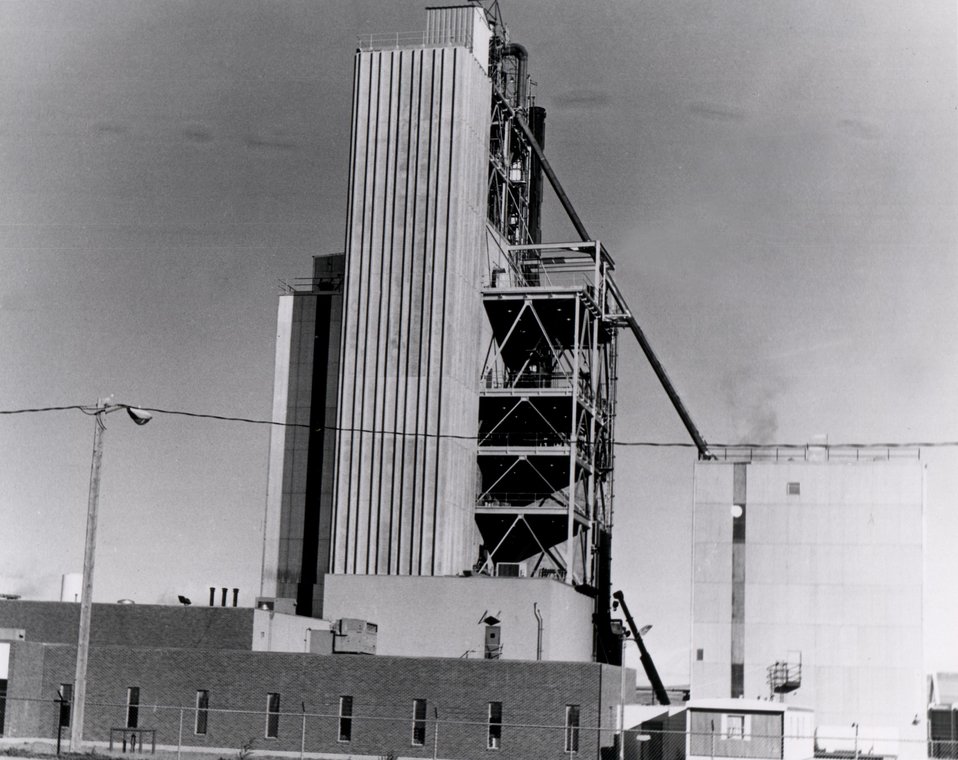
The carbon dioxide acceptor coal-gasification process, a unique fluidized-bed system to convert lignite or sub-bituminous coal to pipeline gas. Circa 1975.